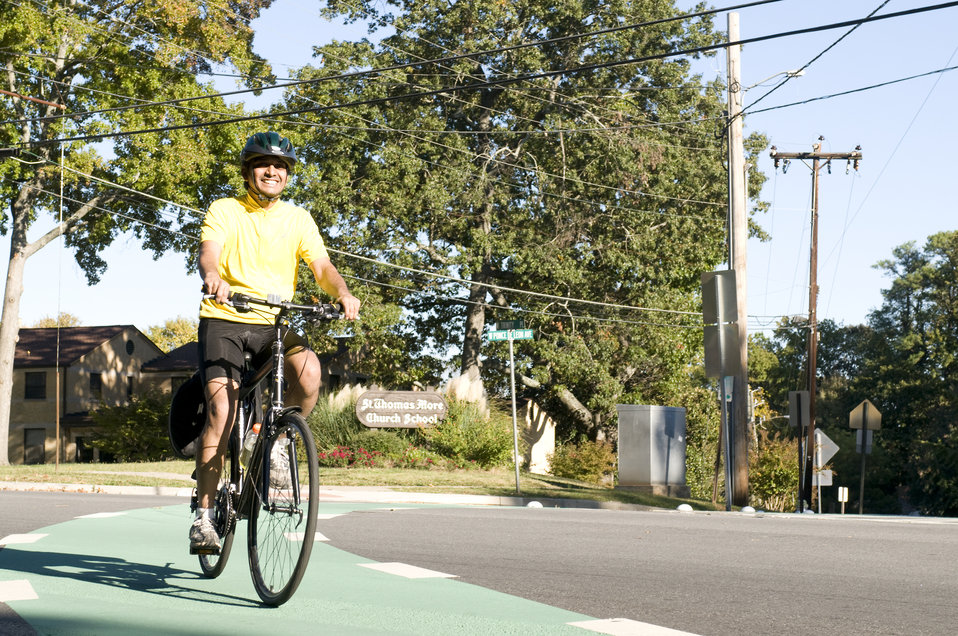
This photograph depicts a smiling male bicyclist, who was riding his bicycle on a sunny Georgia morning. Note the brightly-colored windbreaker he was wearing, which would help drivers see him more easily, as well as the protective, aerodynamic helmet, and the snug leggings, all adding to an overall safer bike ride. Also important, is that he was riding in the designated bicycle traffic lane, and abiding by the proper rules of the road, which govern drivers of both bicycles, and motorized vehicles.